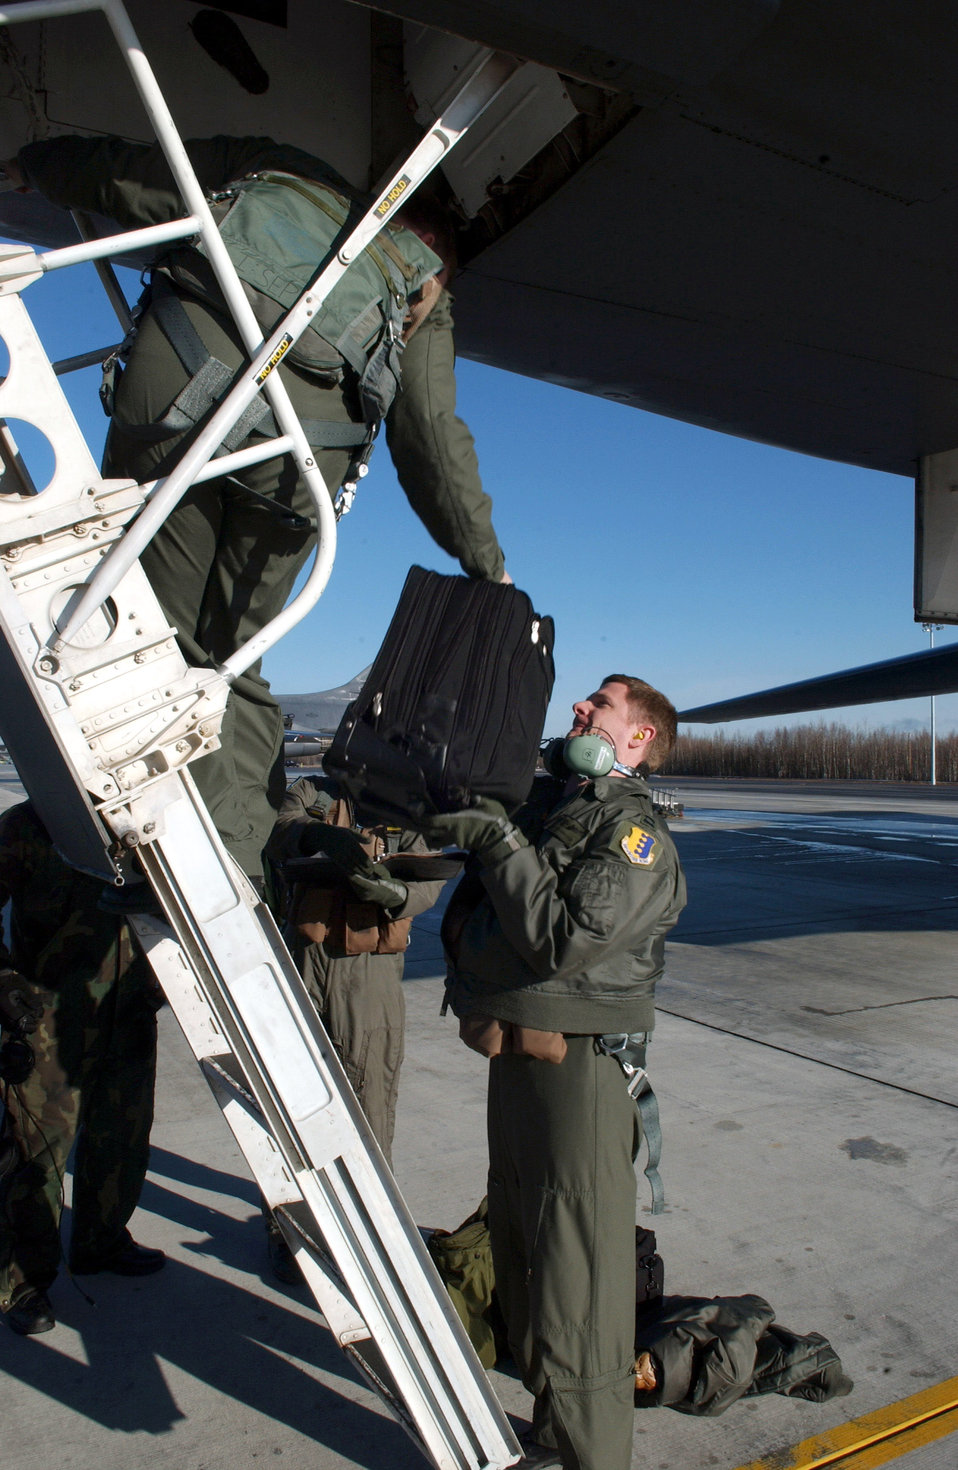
Air combat ready at Red Flag-Alaska

Captains Brian Crawford and Nate Quinlan load bags into a B-1B Lancer April 13 at Eielson Air Force Base, Alaska, during Red Flag-Alaska 07-1. Red Flag-Alaska is a Pacific Air Forces-directed field training exercise for U.S. forces flown under simulated air combat conditions. It is conducted on the Pacific Alaskan Range Complex with air operations flown out of Eielson and Elmendorf Air Force Bases. The captains are 37th Bomb Squadron pilots from Ellsworth AFB, S.D.